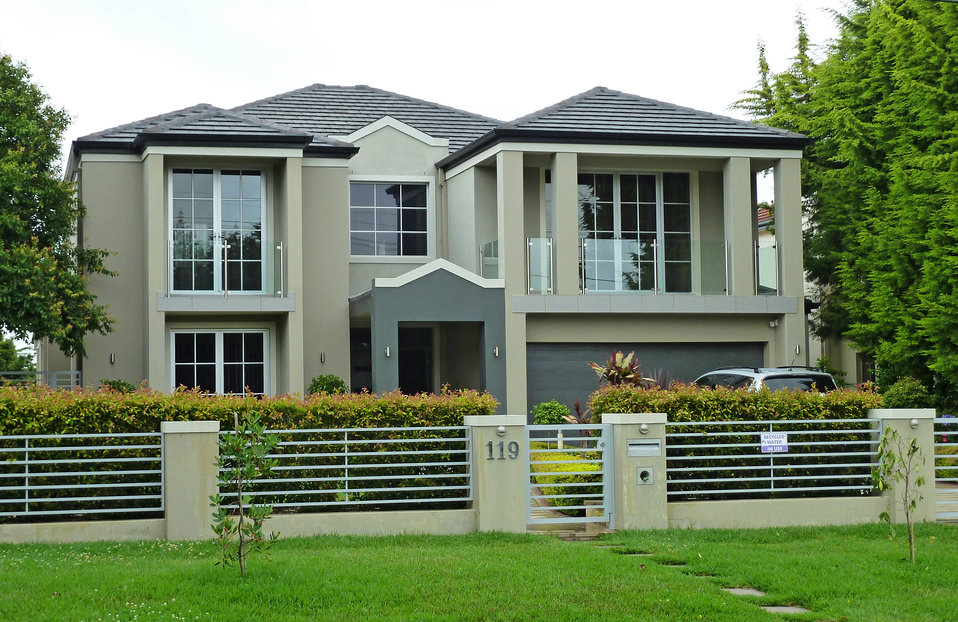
119 Springdale Road, East Killara, New South Wales, Australia.